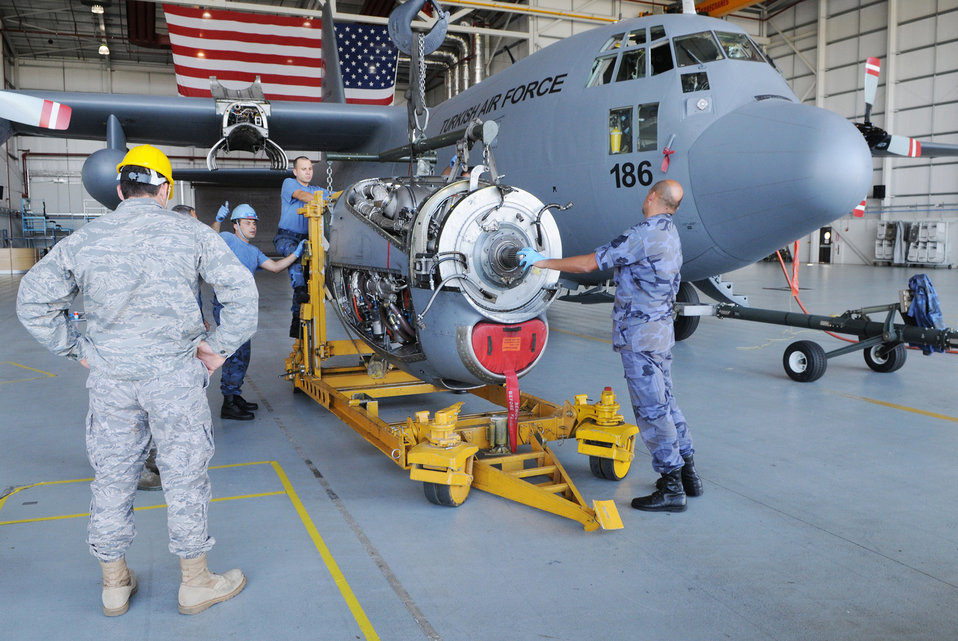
Mildenhall serves as base for Turkish C-130 engine replacement

Turkish air force maintainers work with U.S. Air Force Airmen to remove a damaged engine from a Turkish C-130 Aug. 17 at Royal Air Force Mildenhall, England. Airmen from the 100th Maintenance Squadron lent their facilities and equipment to the maintainers, who were flown in from Turkey after a post-flight inspection revealed problems with the engine, temporarily grounding it.